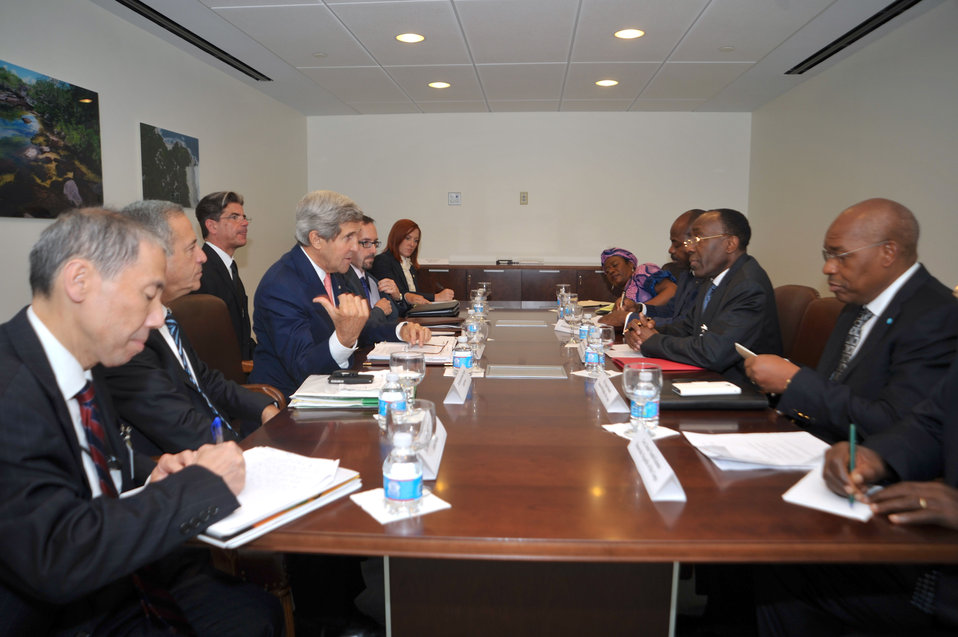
Secretary Kerry Meets With Congolese Foreign Minister Tshibanda

U.S. Secretary of State John Kerry meets with Congolese Foreign Minister Raymond Tshibanda at the United Nations in New York on July 25, 2013.